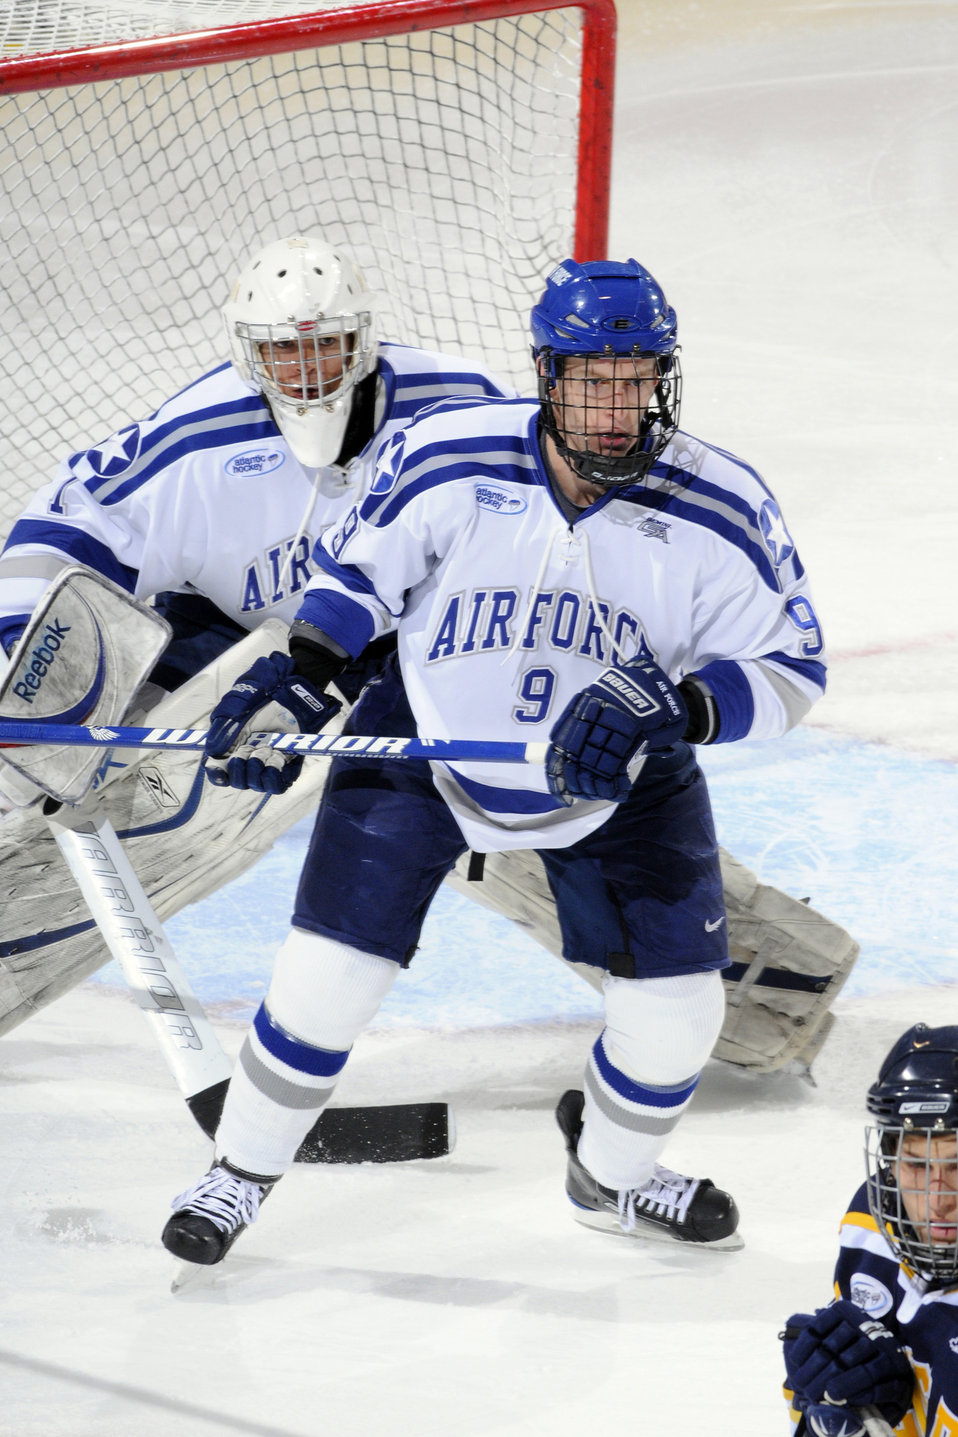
Air Force Academy

U.S. Air Force Academy, CO -- Senior goalie Andrew Volkening keeps an eye on the puck over the shoulder of Senior Brandon Johnson as Volkening earned his first shutout of the season, and 12th of his career, as Air Force blanked Bentley 3-0 at the Cadet Ice Arena Nov 7. Air Force is 4-5-1 overall and 4-1-1 in the Atlantic Hockey Association. Air Force plays its next four games on the road, starting with a two-game series at Holy Cross, Friday and Saturday in Worcester, Mass.